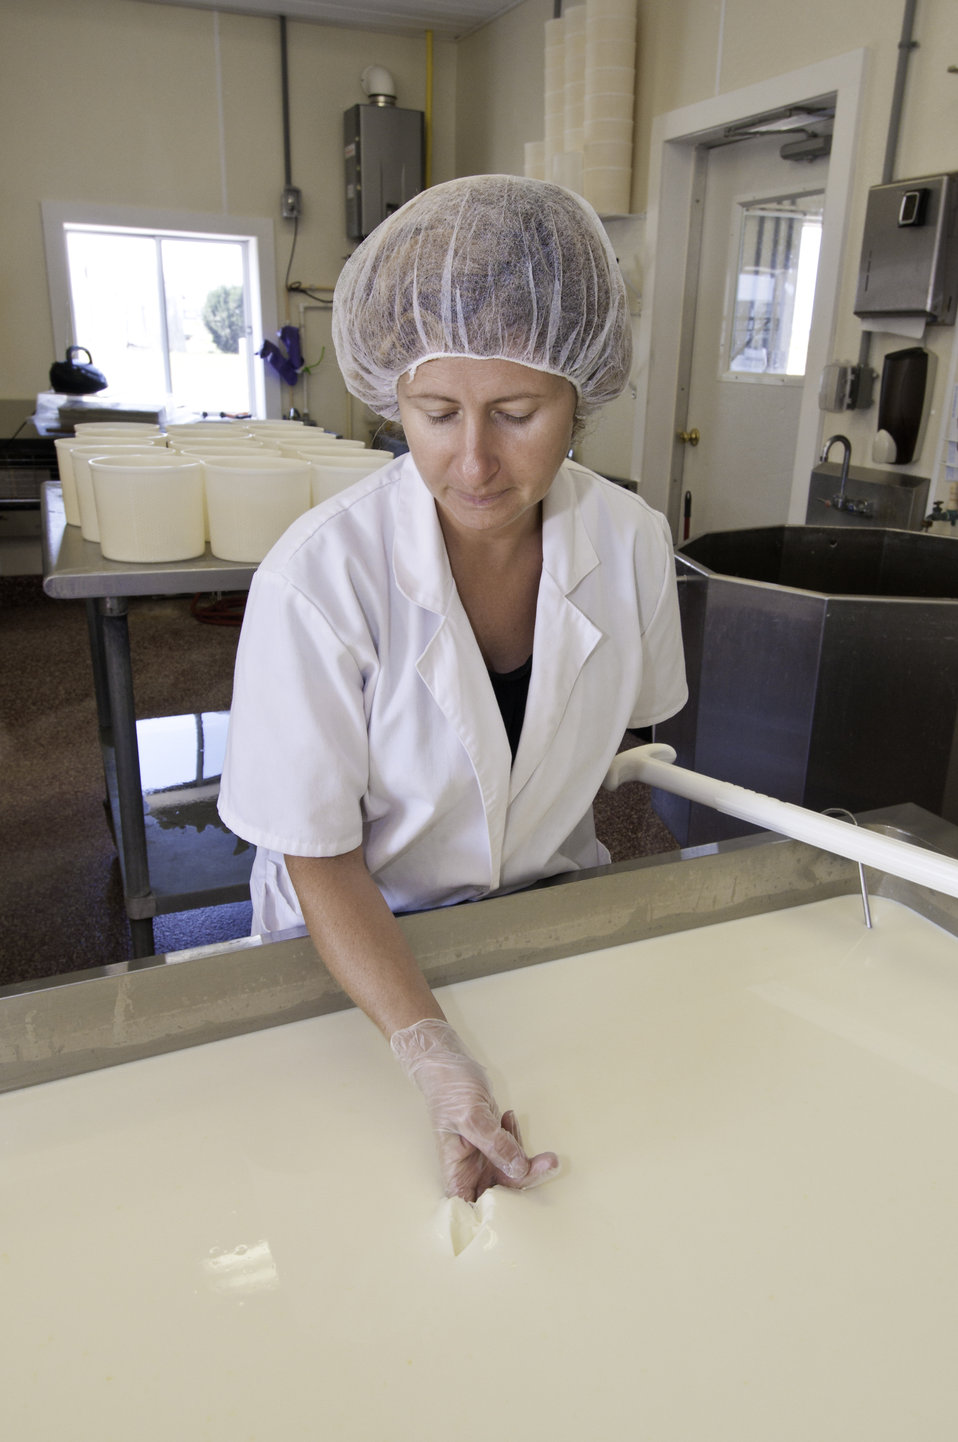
Chapel’s Country Creamery owner Holly Foster in Easton, MD checks the set of the milk curd from fresh raw milk after vegetable rennet was added to the milk and let set, until it reaches a custard like consistency. The time varies from 30 minutes to 2 hours. The staff personally tests to see if it is ready to cut. Only a true cheese maker can tell when the curd is ready to be cut. Next, the curd is cut into small cubes with curd knives. Timing is everything in this step. Then the curds are cooked and stirred in the whey that was expelled in the cutting process. The dairy uses fresh raw milk 12-24 hours old. The milk is all-natural and contains no synthetic hormones, antibiotics, or chemical compounds. The 1150 pounds of milk in the vat will be used to make the dairy’s “Bay Blue” Cheese.